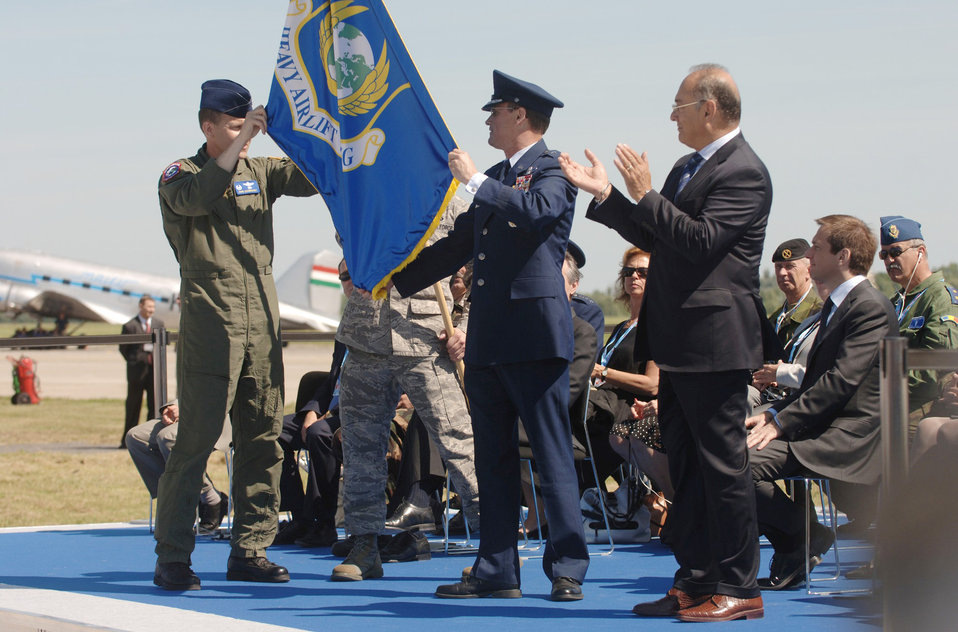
12 nations activate groundbreaking heavy airlift wing

During the official activation ceremony of a first-of-its-kind multinational heavy airlift wing at Papa Air Base, Hungary, July 27, U.S. Air Force Col. John Zazworsky and Brig. Gen. Richard Johnston unveil the organizational flag. The ceremony celebrated the efforts of the 12 nations who, during the last 10 months, stood up the organization that will provide strategic airlift worldwide for humanitarian, disaster relief, and peacekeeping missions in support of the European Union, United Nations and NATO.